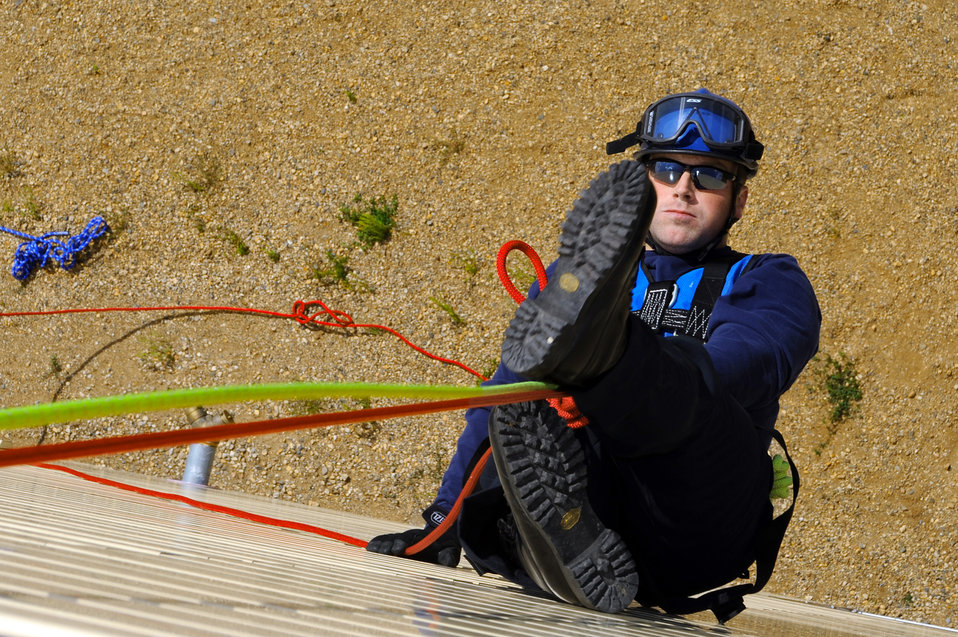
Going down

Kristopher Doughty, 5th Civil Engineer Squadron firefighter, rappels the fire department training facility during an exercise Aug. 24, 2010, at Minot Air Force Base, N.D.